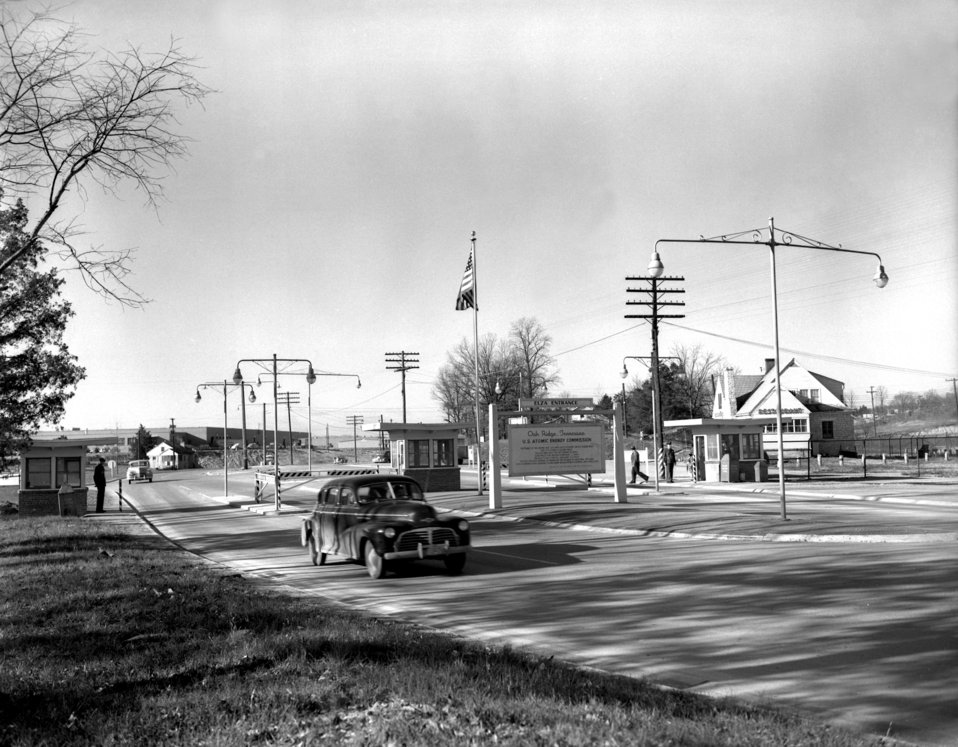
Elza Gate Security Patrole Oak Ridge

005409-7bb DOE photo by Ed Westcott

Elza Gate Oak Ridge Tennessee 2/25/1949